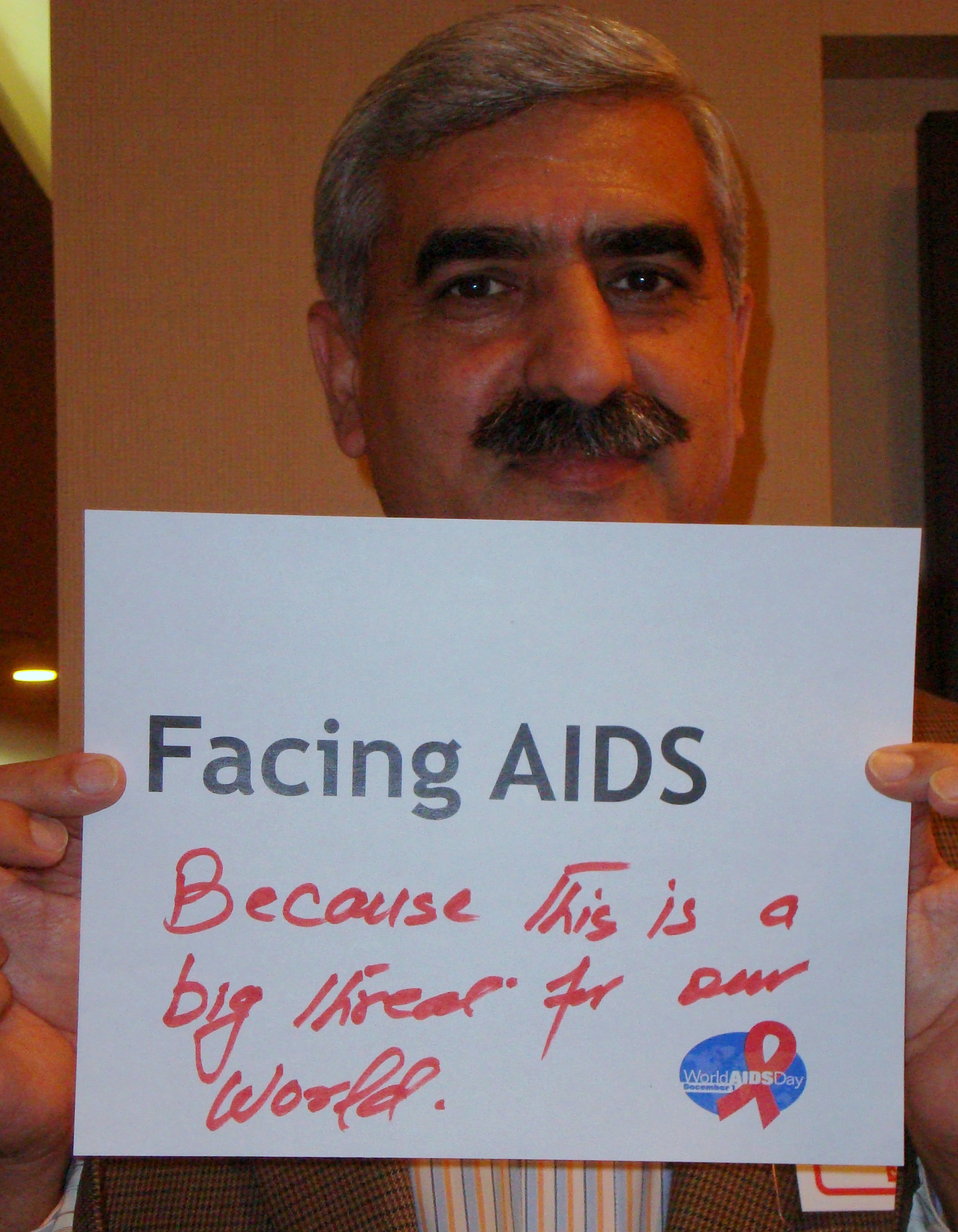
FacingAIDSCampaign 044